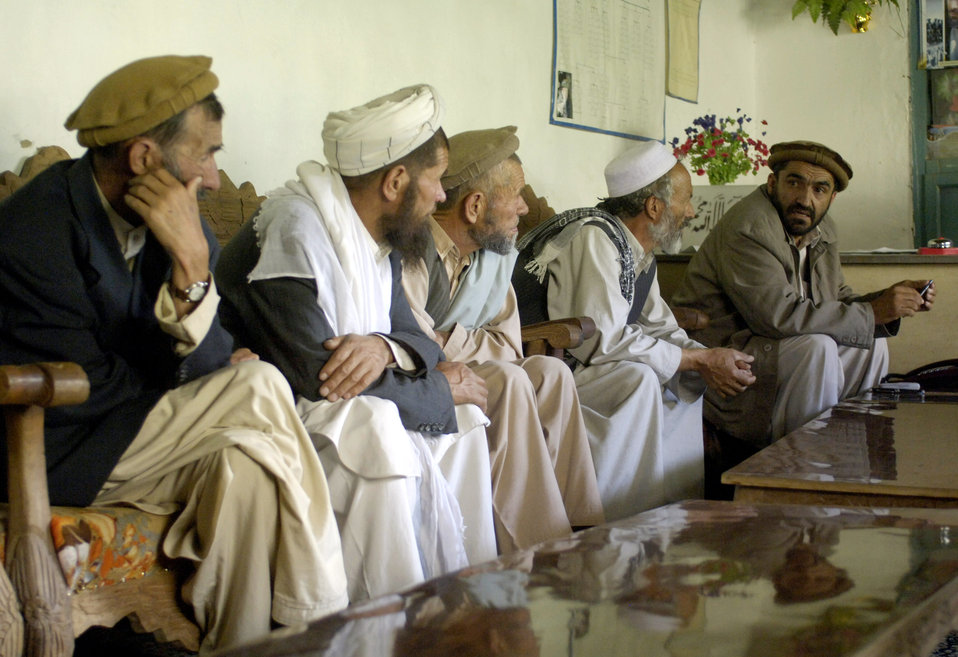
Panjshir PRT

Dara district manager Malam Sorab (right) confers with district officials during a meeting with Panjshir Provincial Reconstruction Team commander Lt. Col. Christopher Luedtke (out of picture) Aug. 5. The meeting was set up to discuss infrastructure development in the district. Colonel Luedtke brought members of his PRT into the Dara district of Panjshir province, Afghanistan, to meet with district officials. Colonel Luedtke is deployed from Hill Air Force Base, Utah.